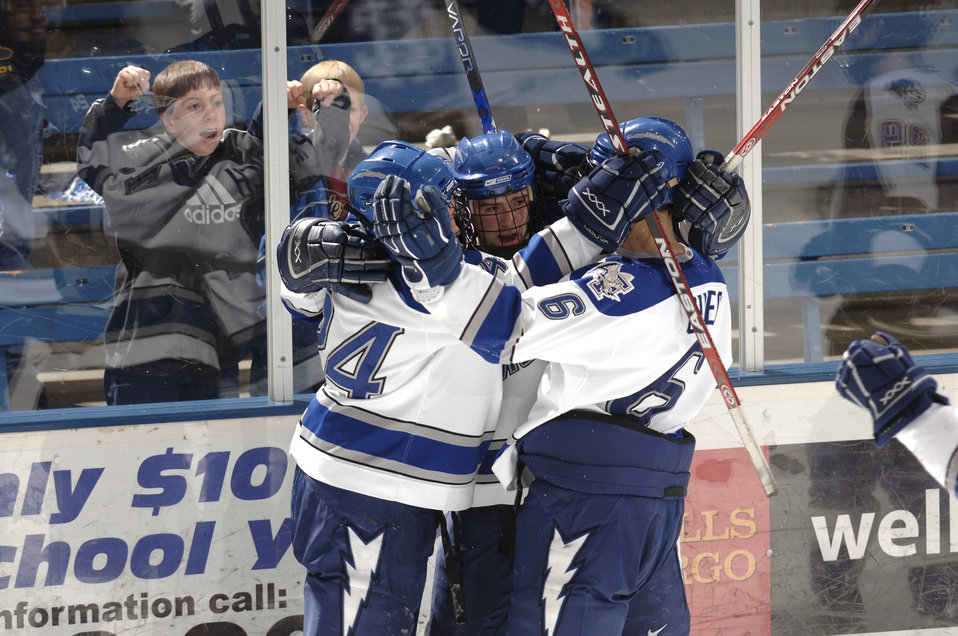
Air Force blanks Holy Cross, 3-0

Mike Phillipich (center) is mobbed by his teammates after his goal early in the third period gave Air Force a 2-0 lead over Holy Cross. The Falcons went on to win 3-0 in the quarterfinals of the Atlantic Hockey Association Tournament.